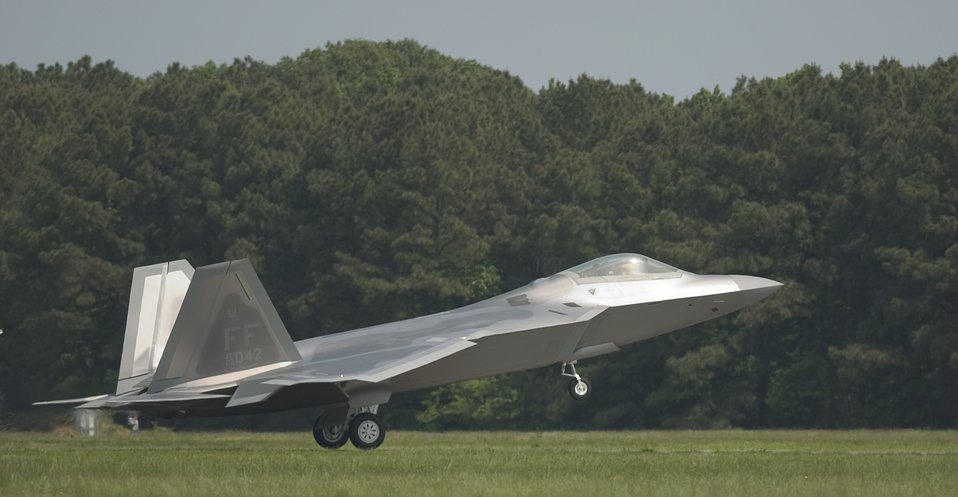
Special delivery

LANGLEY AIR FORCE BASE, Va. -- Langley's first operational F/A-22 Raptor touches down here May 12. This is the first of 26 Raptors to be delivered to the 27th Fighter Squadron. The Raptor program is managed by the F/A-22 System Program Office at Wright-Patterson Air Force Base, Ohio.